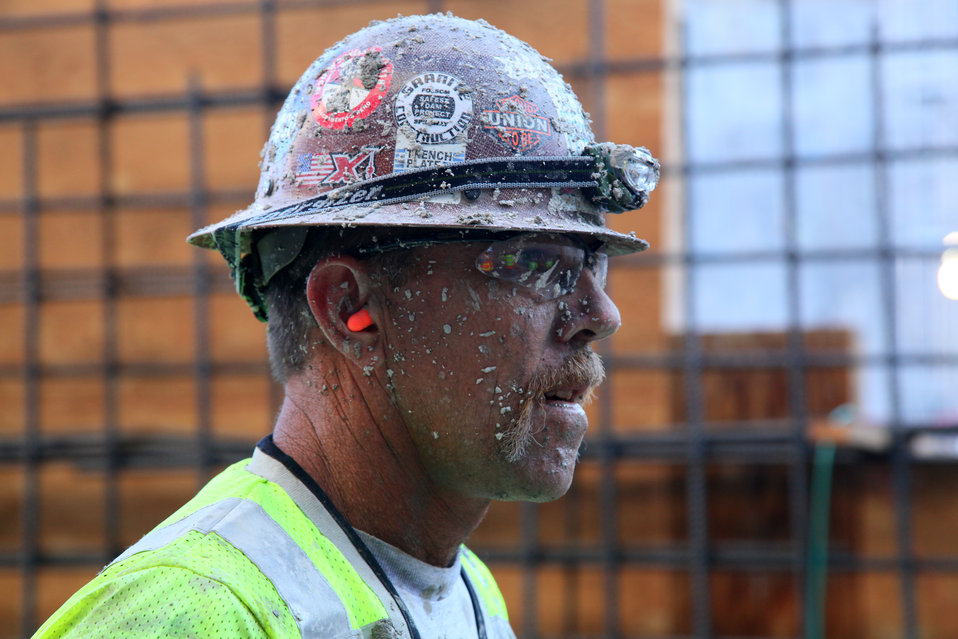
Concrete Placement at the Folsom Dam auxiliary spillway construction

A contractor for the U.S. Army Corps of Engineers Sacramento District shows a face of hard work during concrete placement at the auxiliary spillway at the Folsom Dam Joint Federal Project in Folsom, Calif., June 7, 2012. The Folsom Dam Joint Federal Project is a joint effort of the Corps, U. S. Bureau of Reclamation, the Central Valley Flood Protection Board and the Sacramento Area Flood Control Agency to improve the safety of the current dam and reduce flood risk for the greater Sacramento area.